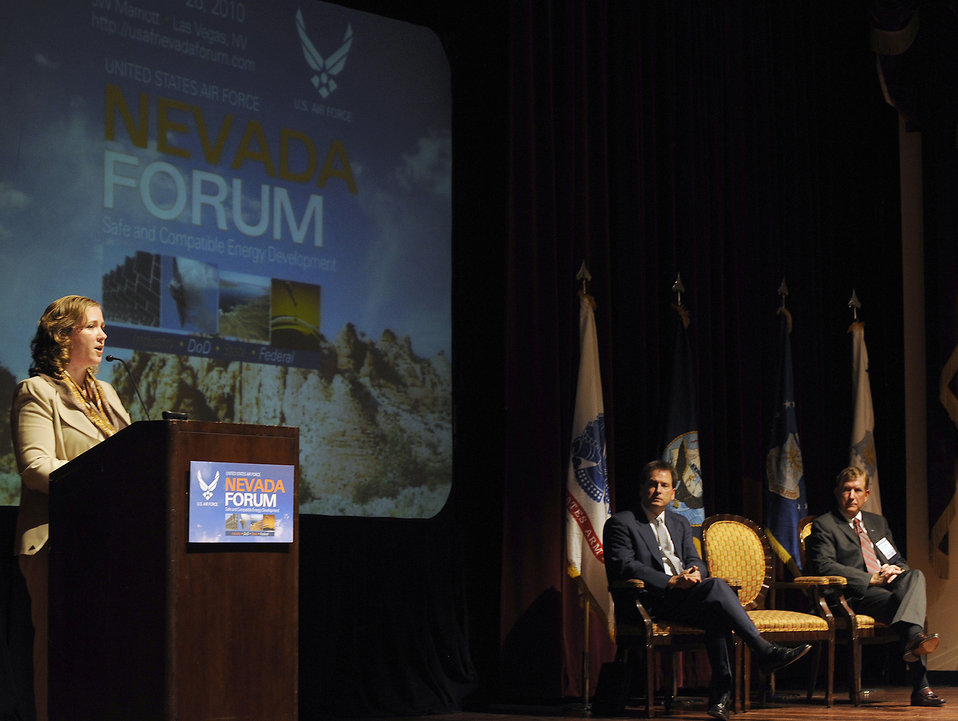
Nevada Forum

Undersecretary of the Air Force Erin C. Conaton delivers opening remarks at the Nevada Energy Forum, an Air Force-hosted three-day brainstorming to find ways for the service to reduce fossil fuels usage Aug. 24, 2010, in Las Vegas. Ms. Conaton opened the discussion with Terry Yonkers, the assistant secretary of the Air Force for installations, environment and logistics, and Nevada's Lieutenant Governor, Brian Krolicki.